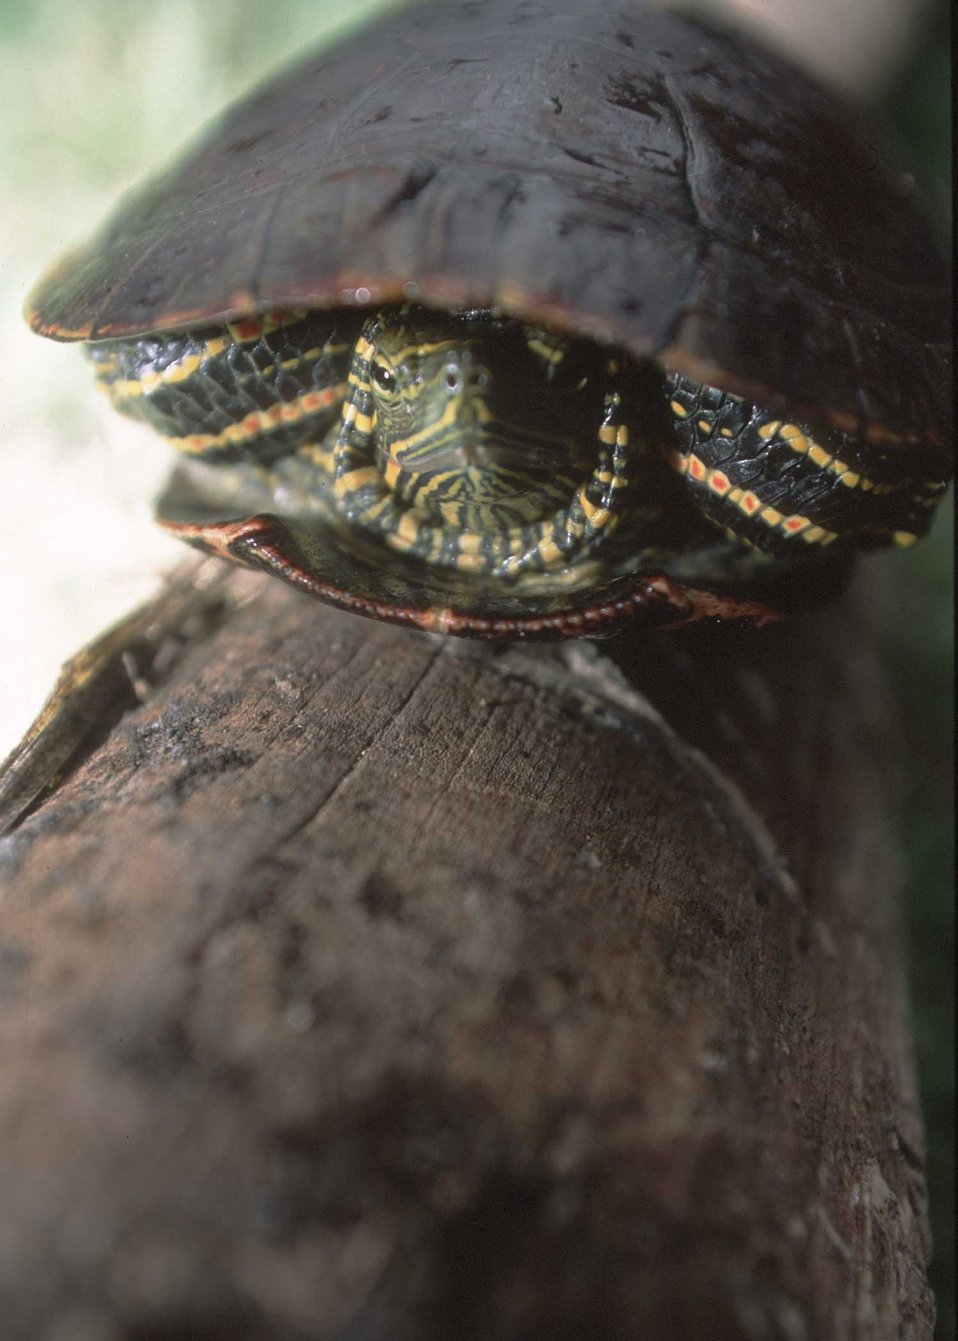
Turtle protects itself by going under its shell.